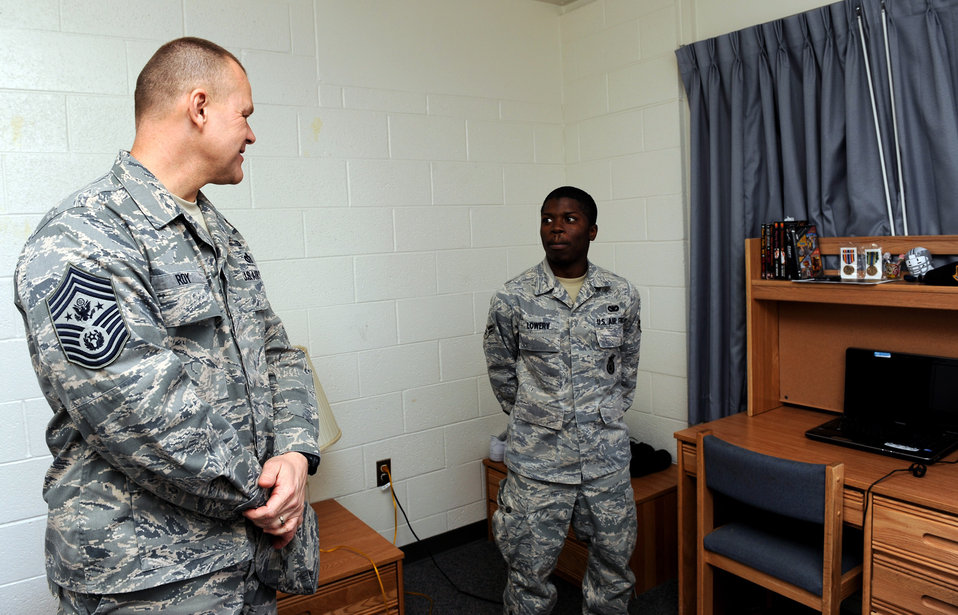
Chief Master Sgt. of the Air Force visits Nellis Air Force Base

NELLIS AIR FORCE BASE, Nev. -- Chief Master Sgt. of the Air Force James A. Roy conducts a dorm inspection at Airman 1st Class Ryan Lowery's dorm, Feb. 3. (U.S. Air Force photo by Airman 1st Class Brett Clashman/RELEASED)

Chief Master Sgt. of the Air Force James A. Roy conducts a dorm inspection Feb. 3, 2010, in Airman 1st Class Ryan Lowery's room, at Nellis Air Force Base, Nev.